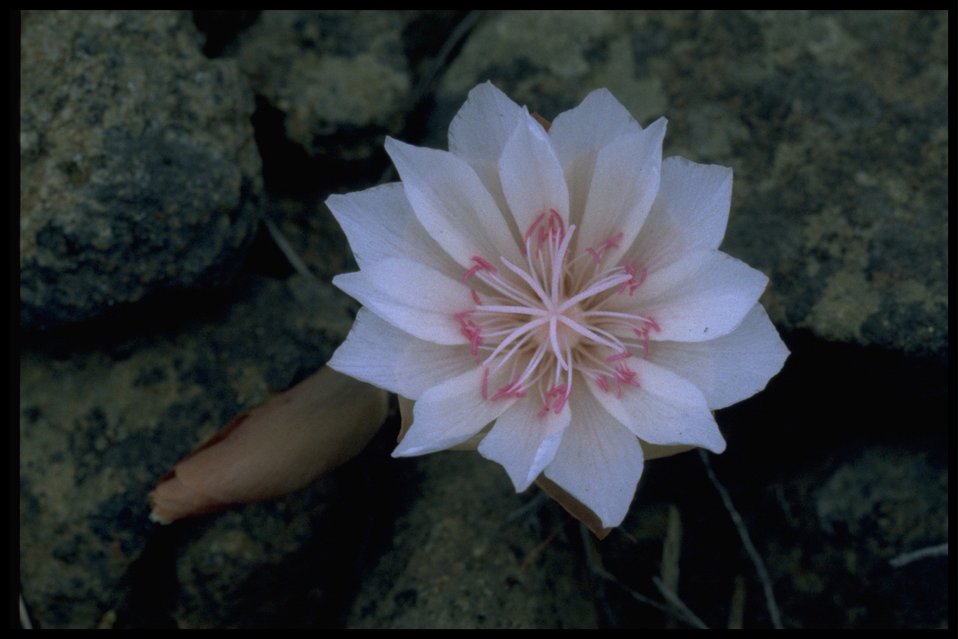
Closeup shot of bitter root (Lewisia rediviva).